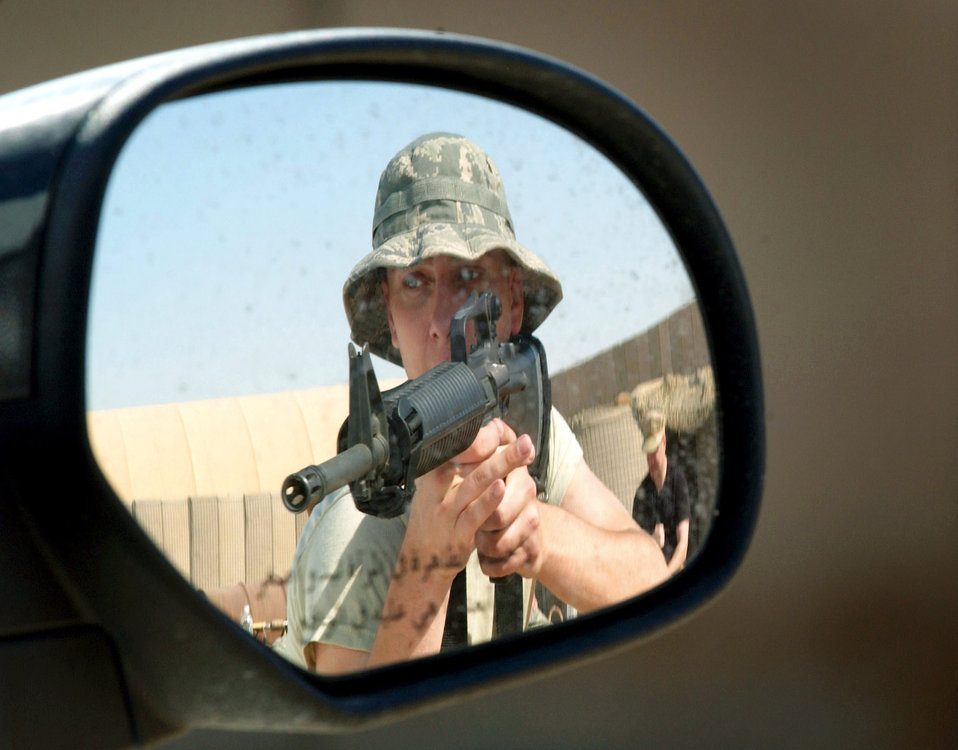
'Don't make any sudden moves!'

Senior Airman Tyler Krantz carefully approaches a